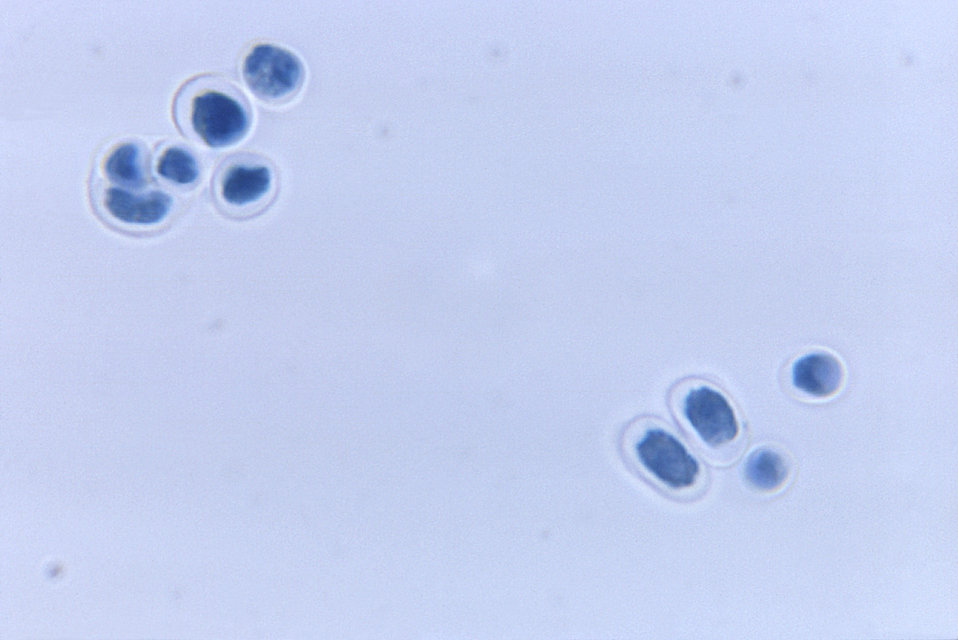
Under a magnification of 1125X, this photomicrograph revealed the presence of numbers of algal organisms, Prototheca moriformis, which were found within a tissue specimen. Though categorized taxonomically as an alga, it derives its sustenance as a saprophyte, consuming dead and decaying organic matter. This algal culture was prepared using a lactophenol cotton blue mount fixation technique.